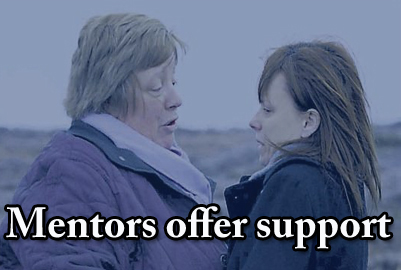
TAPS